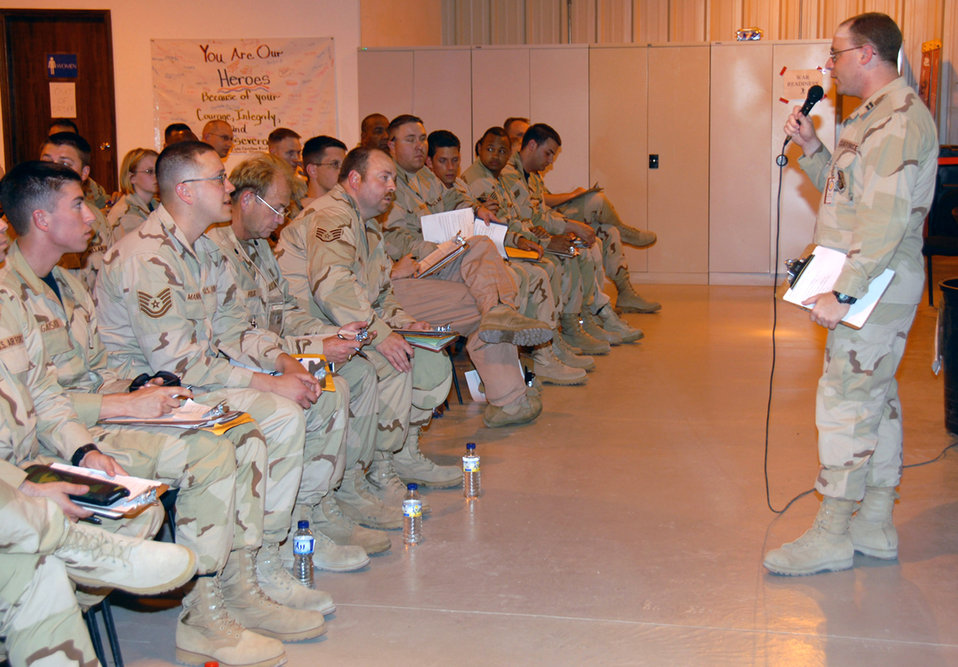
Team preps servicemembers heading to forward locations

Capt. Adam Avnet briefs Airmen who have just arrived at this Southwest Asia air base on their upcoming rotation to forward-deployed locations. Captain Avnet, assigned to the 379th Expeditionary Mission Support Group, is a Personnel Support for Contingency Operations, or PERSCO, team chief,